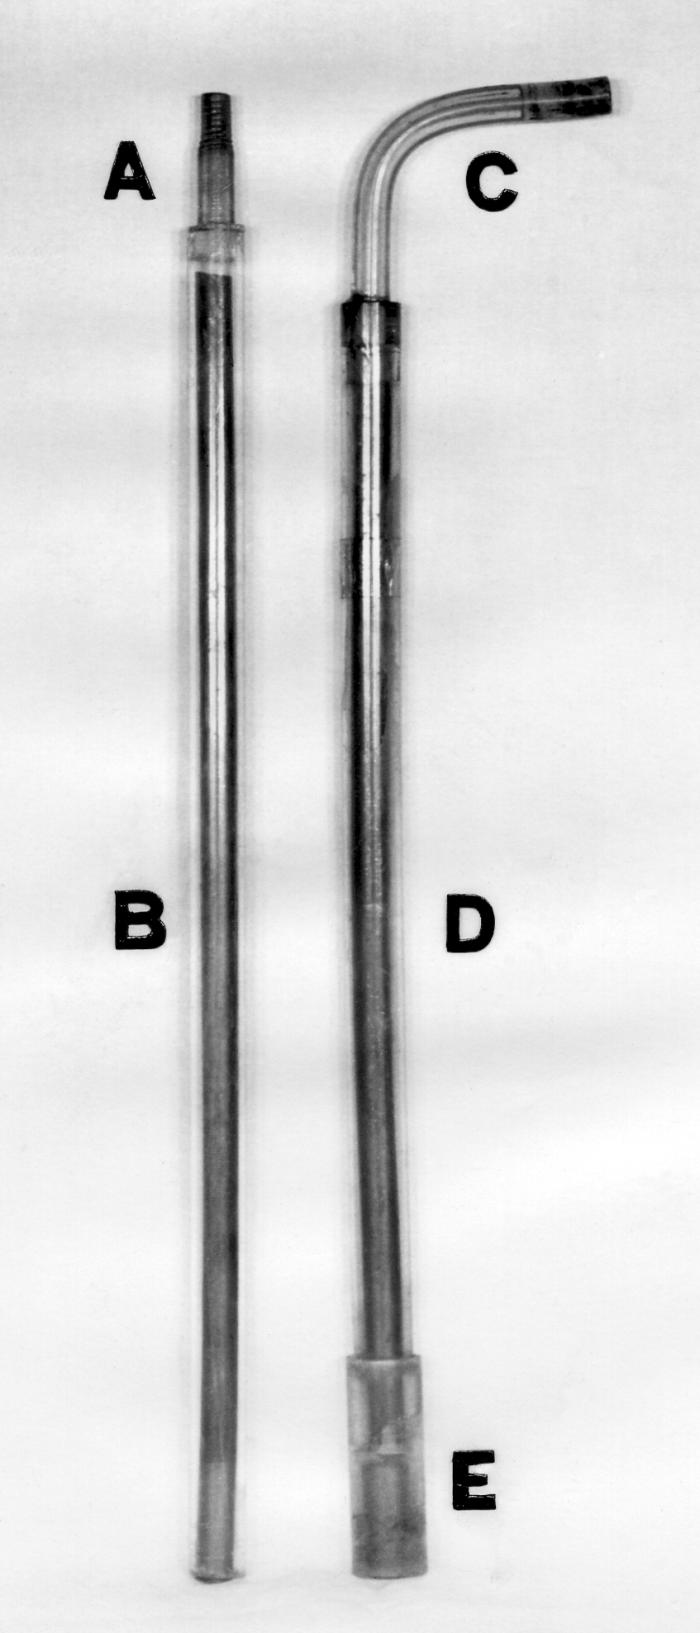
This historical photograph was provided by the Center for Disease Control's (CDC), National Institute for Occupational Safety and Health (NIOSH). Reprinted from the May, 1951, 'Industrial Hygiene Newsletter'. The image depicted the probe attachments to be used in conjunction with an inexpensive airflow measuring device called a velometer. When fitted with probes such as these, air samples can be taken in isolated spaces (see PHIL 9489). Velometers measure concentrations of pollutants in the air.